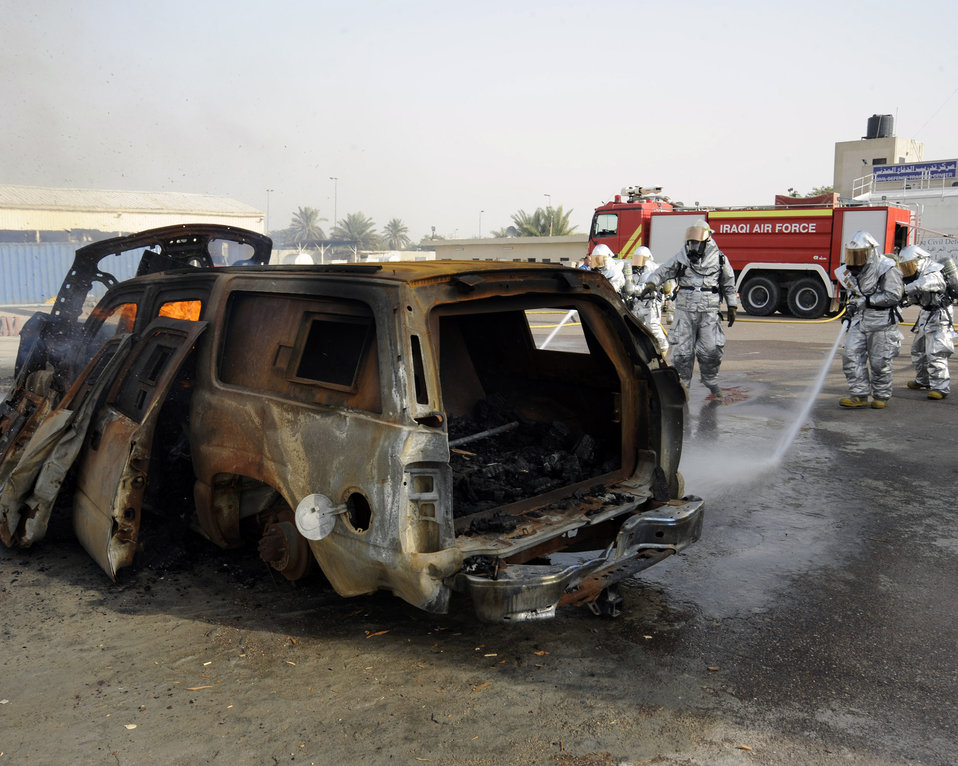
AF firefighters relocate, expand Iraqi fire training course

Master Sgt. James Brody, center, observes Iraqi firefighters as they extinguish a fire during a training exercise in Baghdad, Iraq, Dec. 24. Sergeant Brody is an assistant firefighter instructor and is deployed to the 447th Expeditionary Civil Engineer Squadron, at Sather Air Base, Iraq, where he is the training chief.